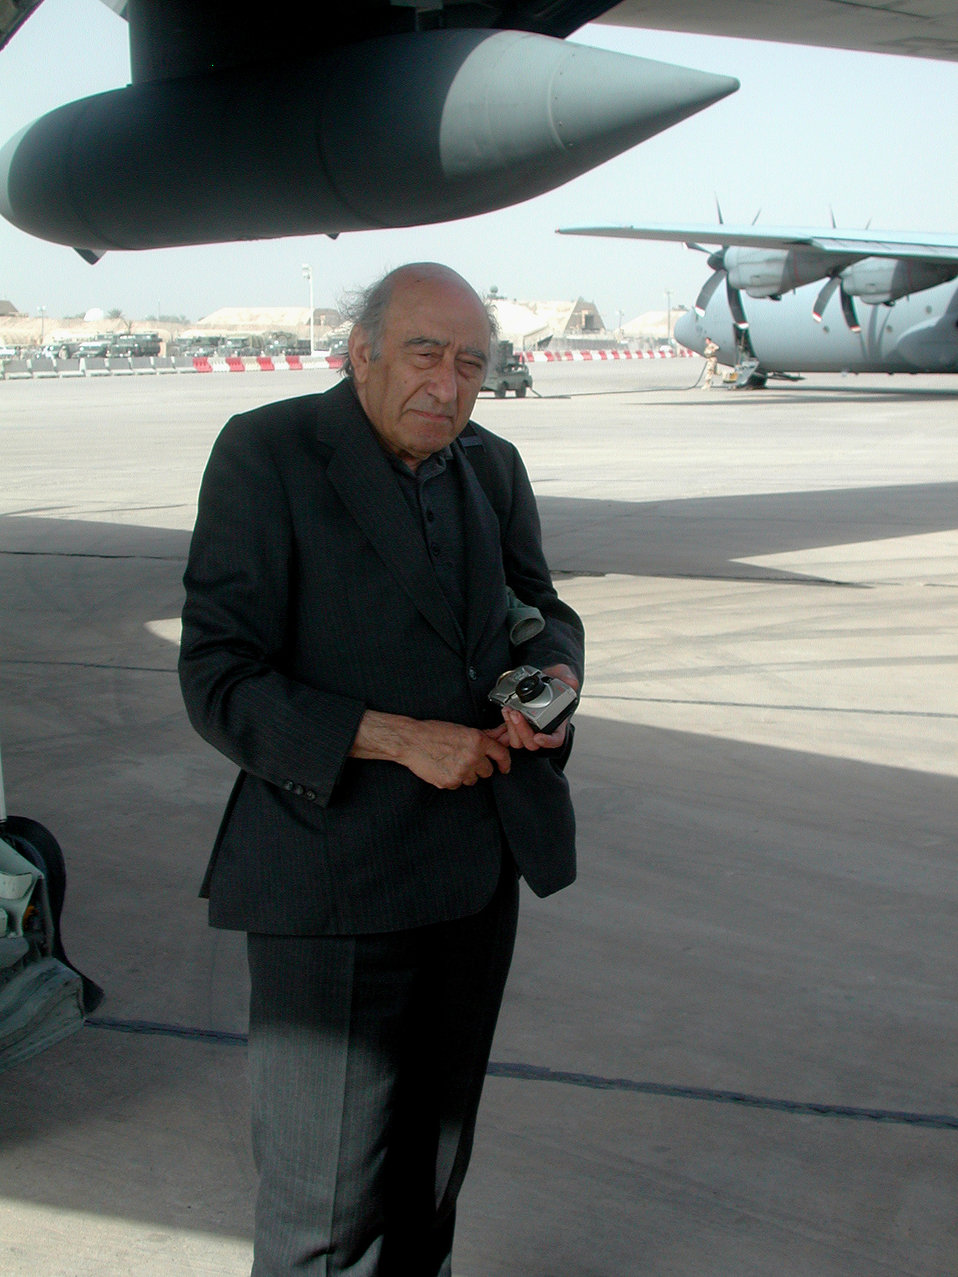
Home again

BAGHDAD, Iraq -- Khalid Kishtainy steps off a C-130 Hercules at Baghdad International Airport on Oct. 21. Kishtainy is an Iraqi novelist and columnist for the Asharq Al-Awsat Arabic newspaper in London. He was last in Baghdad in 1989 before he left for fear of his life. The former Saddam Hussein regime had two death sentences on Kishtainy for a book he wrote about the regime. The author grew up in Baghdad, and he considers it his hometown.